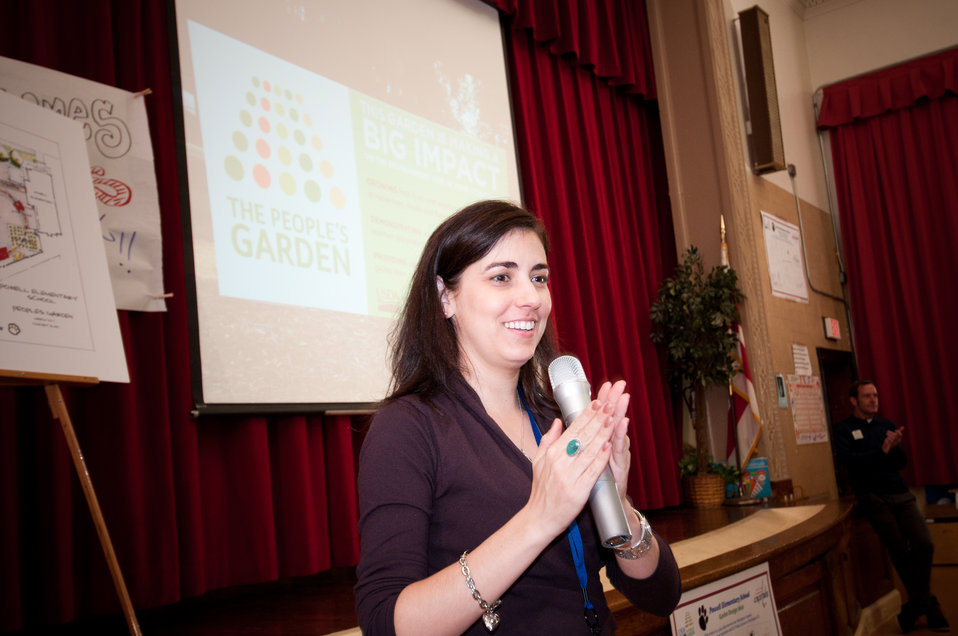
Principal Janeece Docal, aplauded an dpraised the work of The People’s Garden team for W. B. Powell Elementary School, (consisting of the Washington Capitols, U.S. Department of Agriculture and D.C. Public Schools in Washington, D.C.) who revealed to 289 parents and students, the School Garden Design Concept on Thursday, March 10, 2011. The design draft was created by Forest Service landscape architect Matt Arnn, with the support of Natural Resources Conservation Service landscape architect Bob Sneickus, Outreach and Education Coordinator Annie Ceccarini and Project Manager Leslie Burks who worked with the school during an earlier visit to develop illustrated ideas from parents and students. Representing the Washington Capitols is Defenseman, Number: 52 Mike Green, Comcast SportsNet Analyst Alan May and Director of Community Relations Elizabeth Wodatch.